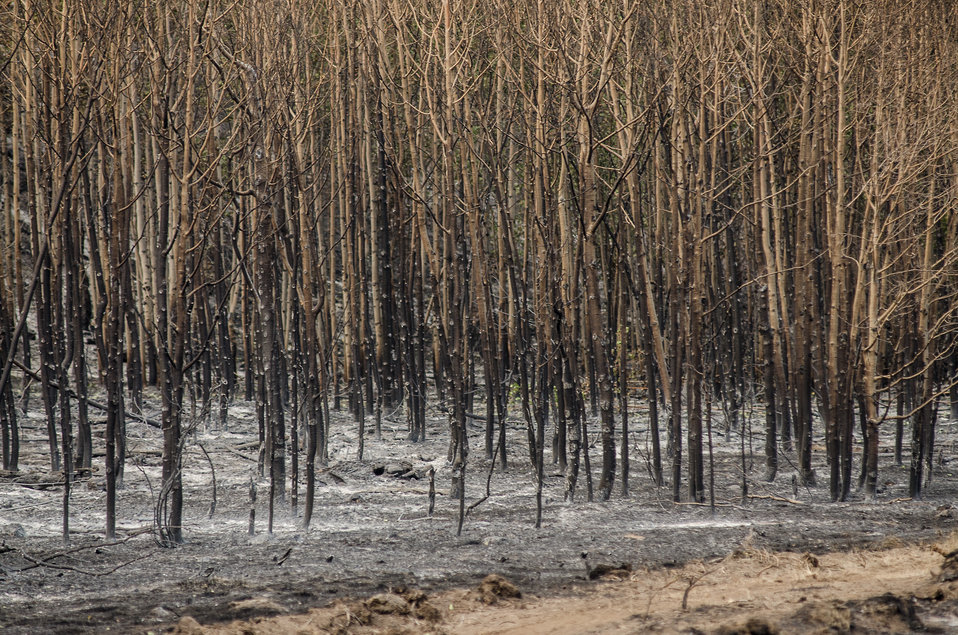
Roads were an effective fire break during the Beaver Creek Fire, west of Hailey, ID for the fire fighting teams from U.S. Department of Agriculture (USDA) Forest Service (FS) and Sawtooth National Forest and Bureau of Land Management (BLM) on Wednesday, Aug 21, 2013.